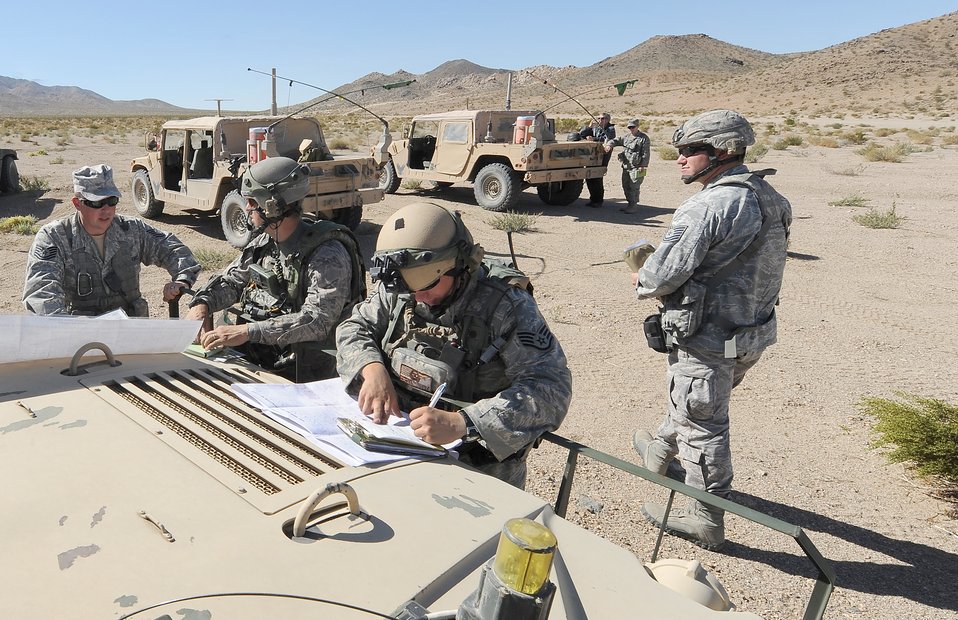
Combat training scenario

Instructors debrief Tactical Air Control Party students after the completion of a combat training scenario Nov. 1, 2010, at the training range on Fort Irwin, Calif. The instructors are with the 12th Combat Training Squadron.